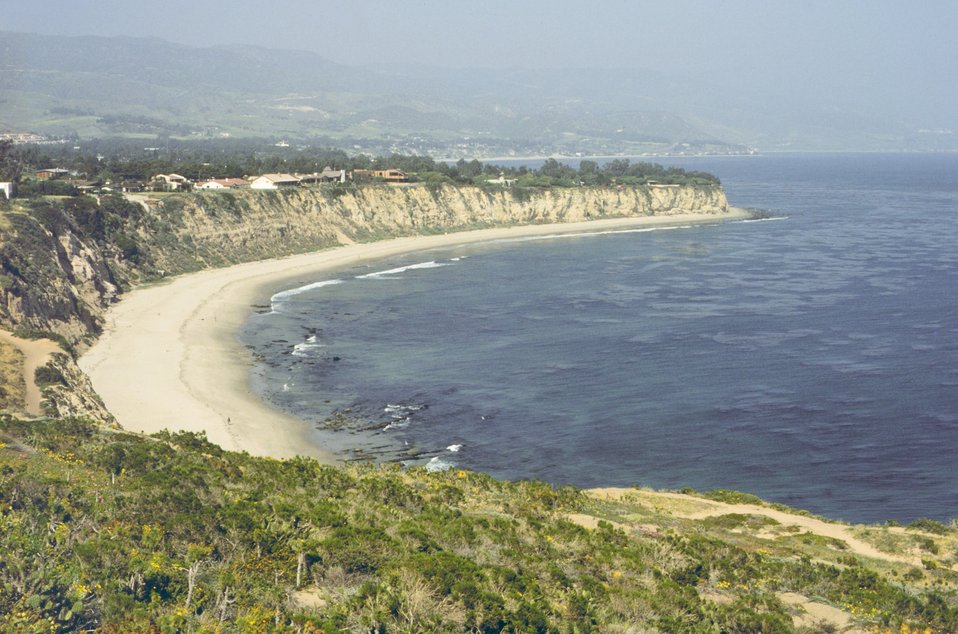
Point Dume area looking towards Malibu.